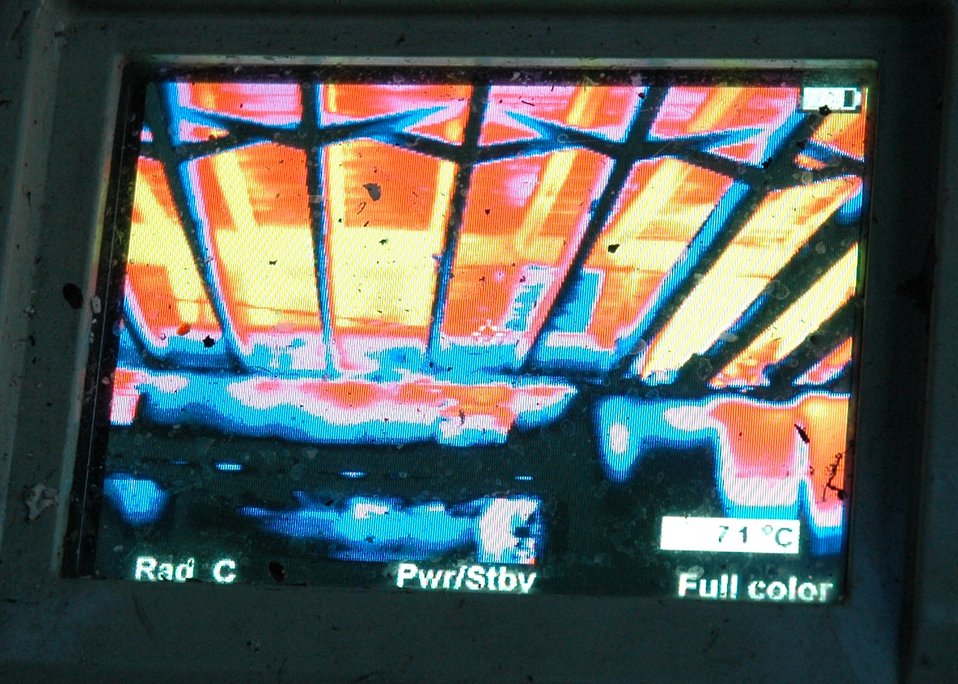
Air Force firefighters fuel flames for live fire training

A close-up from a thermal imaging camera illustrates what firefighters see to determine where